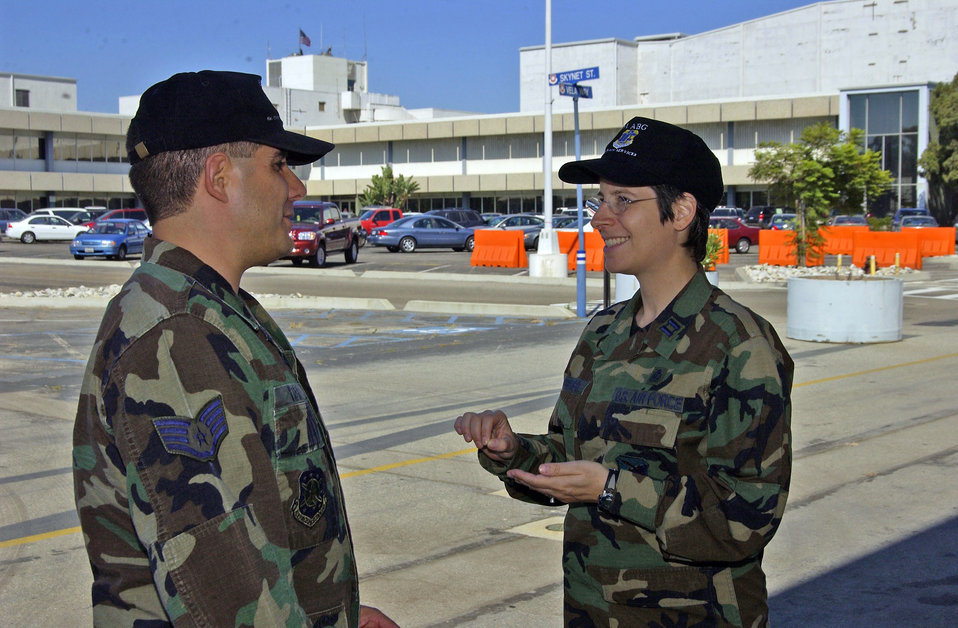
Base chaplain epitomizes Air Force diversity

LOS ANGELES AIR FORCE BASE, Calif. -- Staff Sgt. Carlos Tapia speaks with Chaplain (Capt.) Sarah Schechter here. Chaplain Schechter is a 61st Air Base Group chaplain and the first female rabbi in the Air Force. Sergeant Tapia is assigned to the 61st Communications Squadron.